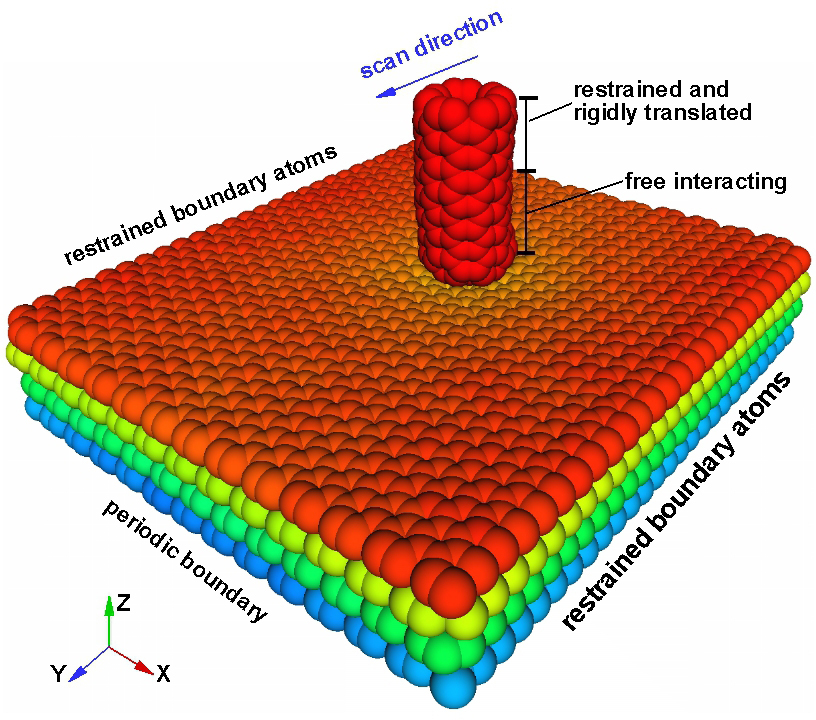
Graphene

NIST software simulates the tip of an atomic force microscope moving left across a stack of four sheets of graphene. Research using this software indicates that graphene's friction is reduced as more layers are added to the stack.